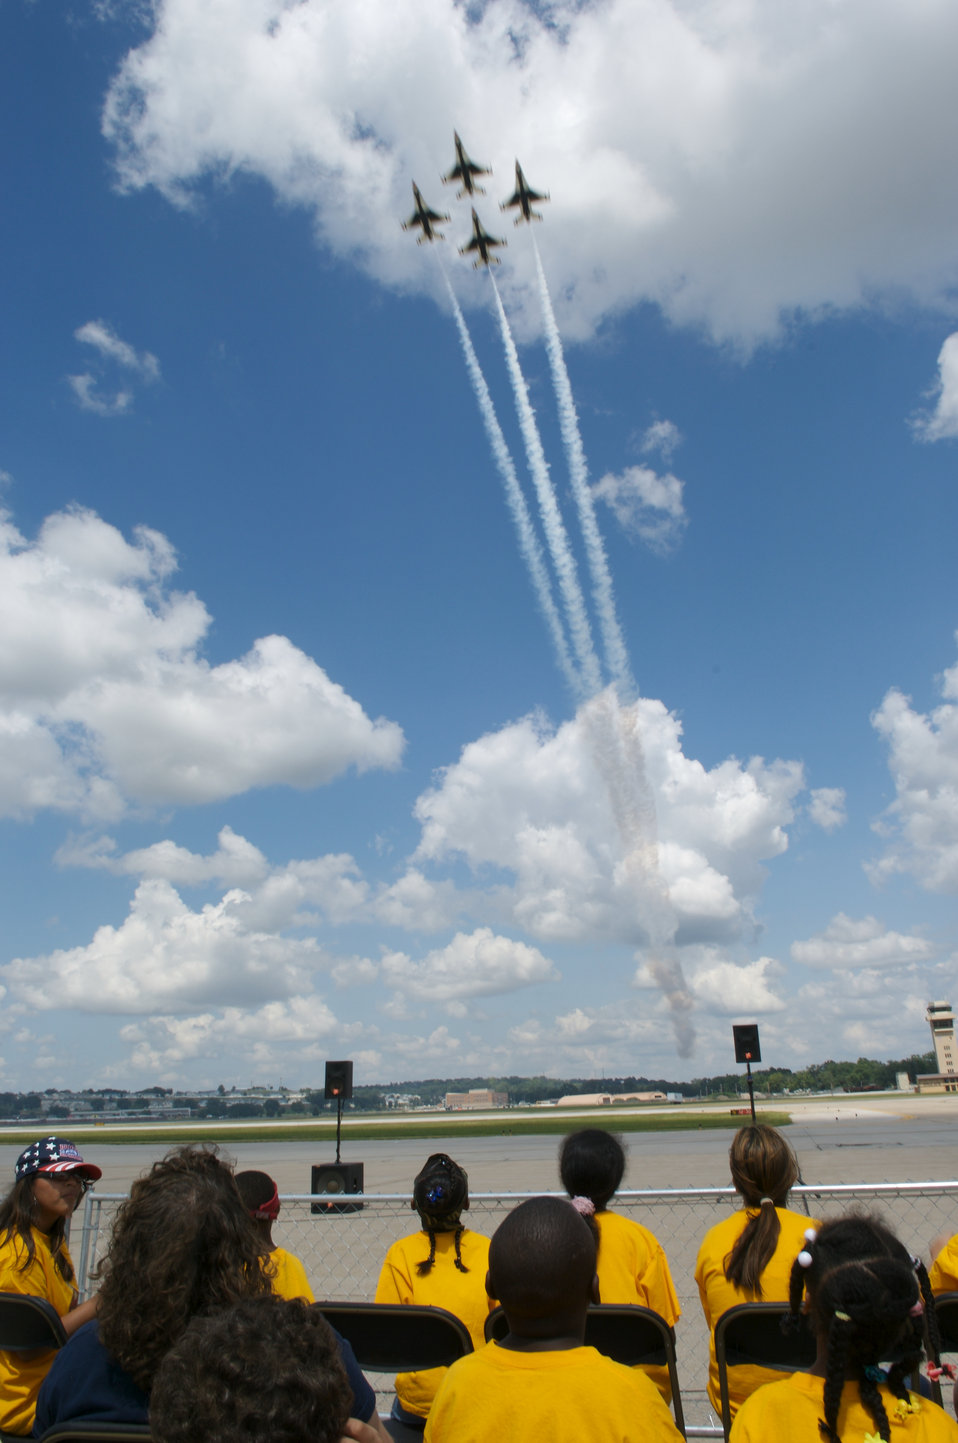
Offutt Airmen hold airshow

Children and special needs visitors watch a complete airshow that featured the Air Force Demonstration Squadron